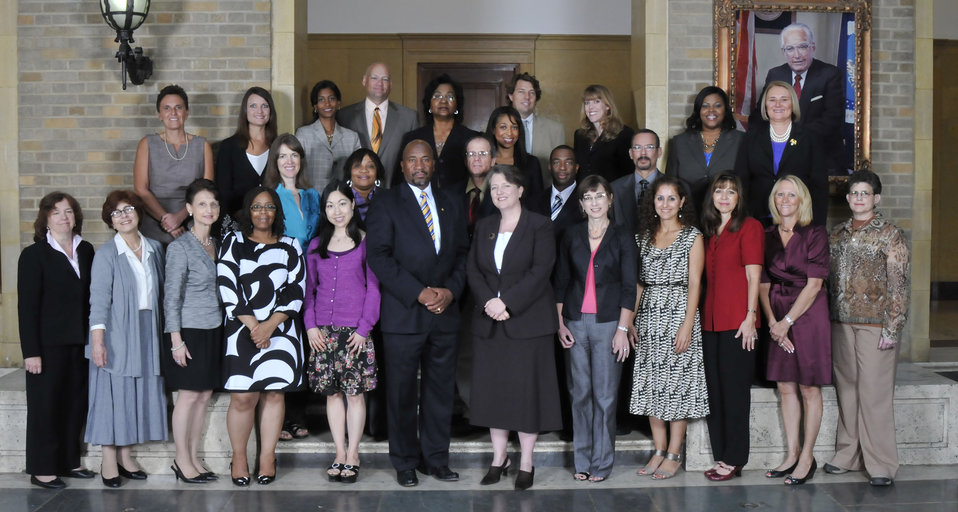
HealthierUS School Challenge Team
Food, Nutrition, and Consumer Services, Alexandria, VA
Bruce Alexander & Cynthia Ann Long, Group Leaders
For Excellence in training, technical assistance, and promotion to double the number of HealthierUS School Challenge certified schools in support of Let’s Move! campaign to end childhood obesity.
On September 14, 2011 in the patio of the Whitten Building Patio of the US Department of Agriculture in Washington, DC.